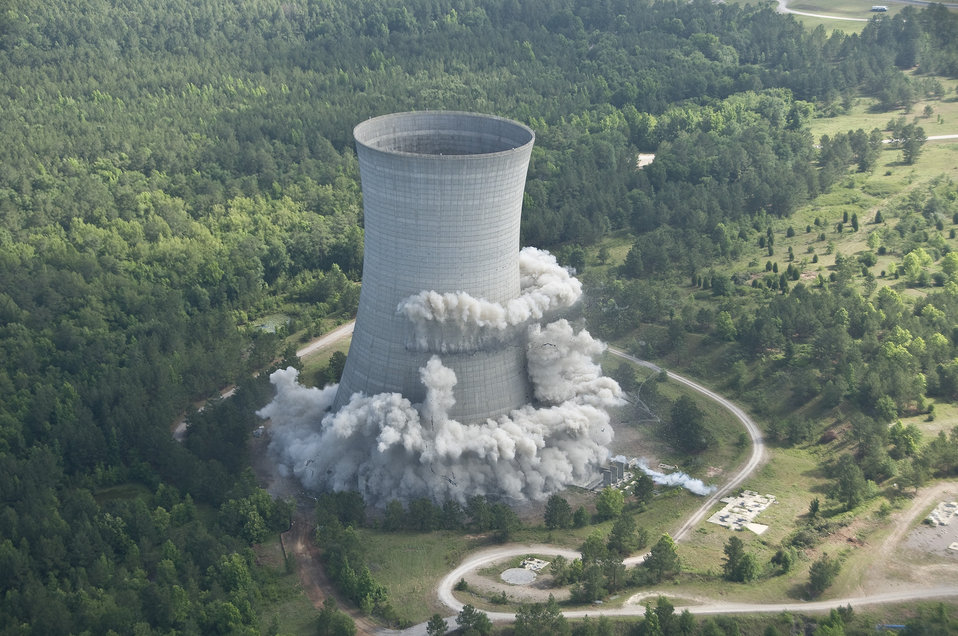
Savannah River Site work

Demolition underway at the Savannah River Site.